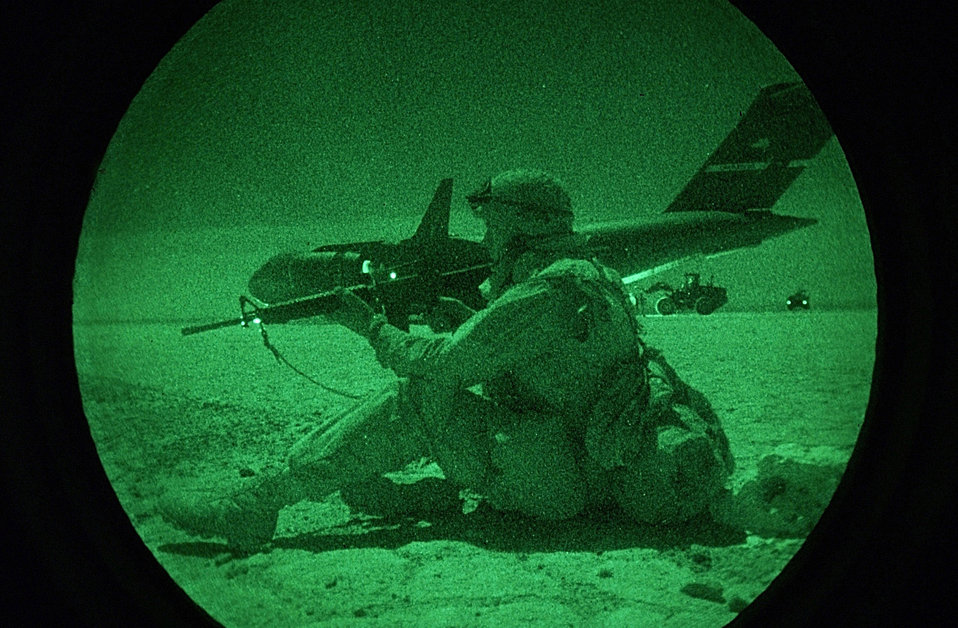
Thanks, sailor

OPERATION ENDURING FREEDOM -- A sailor from the U.S. Navy Mobile Naval Construction Battalion 113 Seabees in Gulfport, Mississippi, provides perimeter security for a C-17A Globemaster III aircraft from the 437th Airlift Wing at Charleston Air Force Base, S.C., at an operating location in support of Operation Enduring Freedom. C-17 aircrews from the 437th AW airlanded and infilled the Seabees, making it the first ever successful strategic airlift operation by a C-17 aircraft into an undeveloped dirt landing strip.